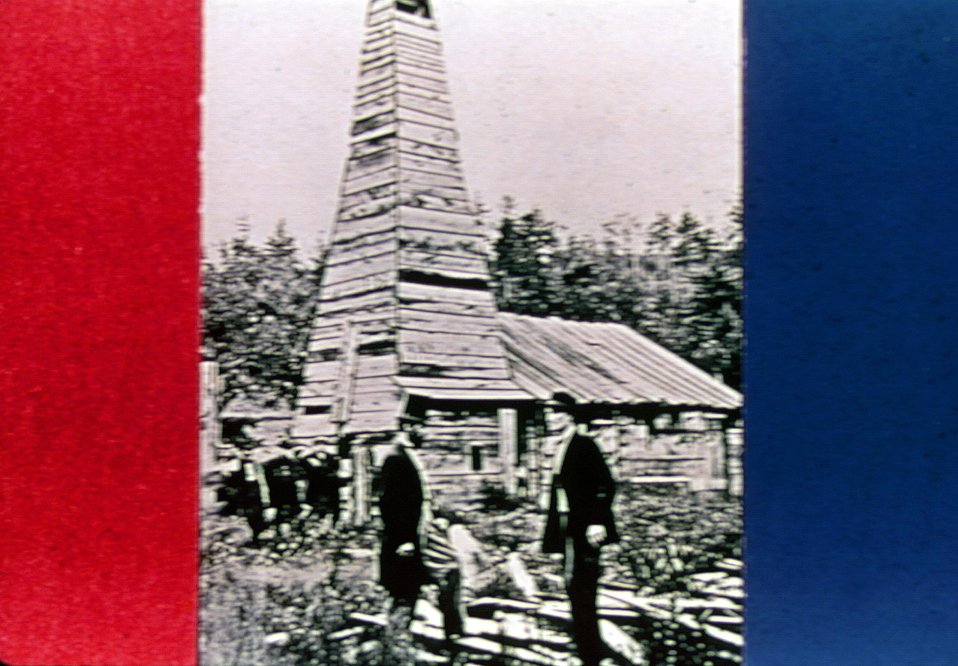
First U.S. Oil Rig. c. undated